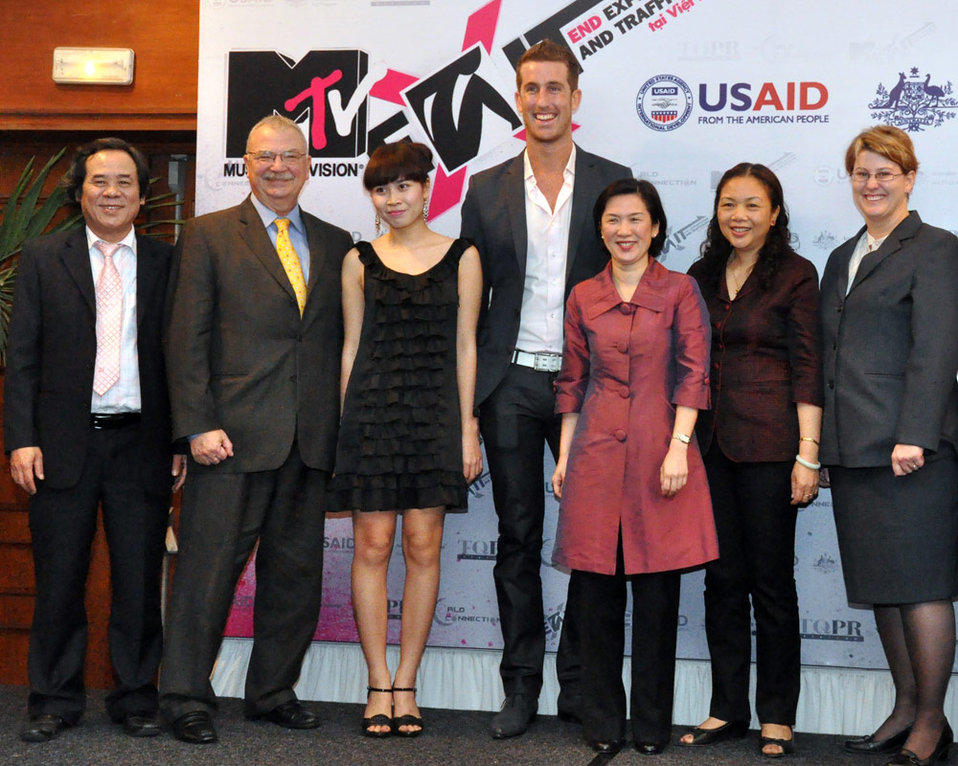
USAID, MTV EXIT Press Launch, March 23, 2010